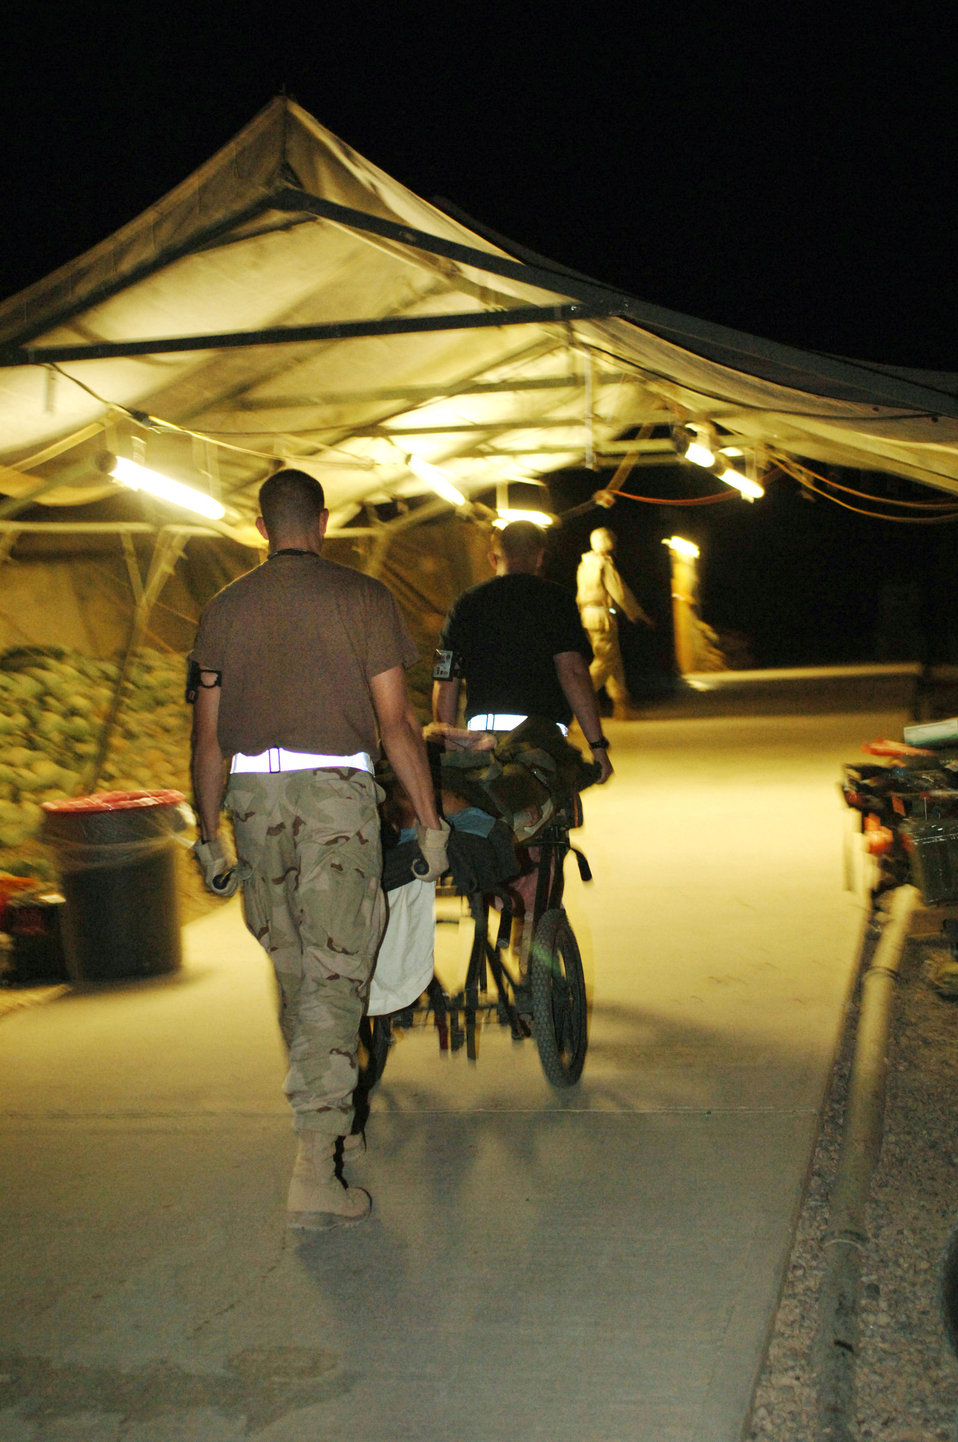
Air Force hospital saves Iraqi lives

BALAD AIR BASE, Iraq -- Air Force medics rush an injured Iraqi from an ambulance here into the Air Force Theater Hospital on Sept. 29 after a suicide car bomb attack at the nearby town of Balad.